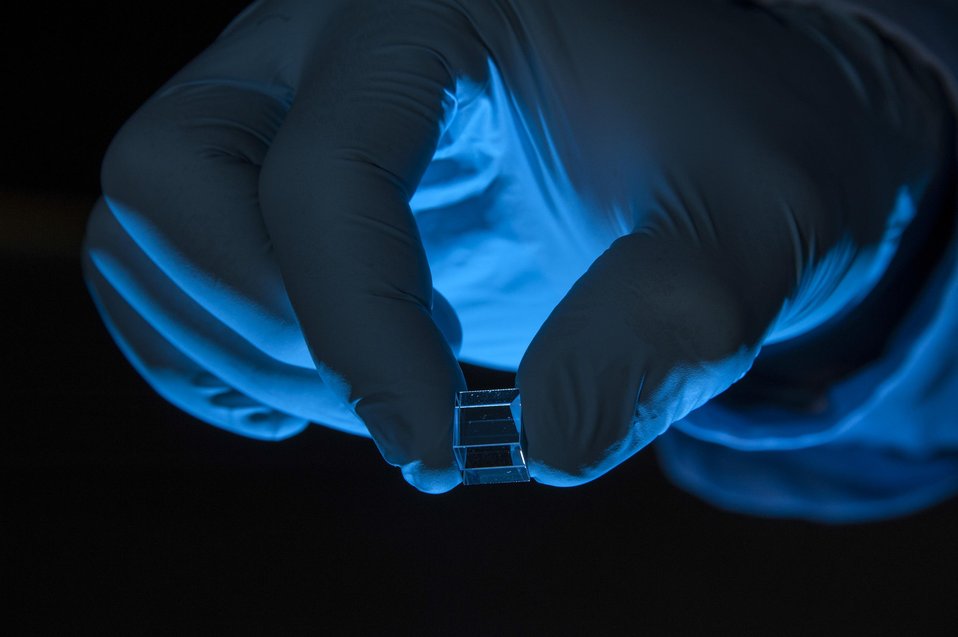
RESEARCHERS AT THE SAVANNAH RIVER NATIONAL LABORATORY ARE DEVELOPING PHOTONIC CRYSTALS FOR ENHANCED RADIATION DETECTORS.

This innovative process uses nano-porous anodized aluminum oxide masks to pattern the surfaces of bismuth gemanate scintillator crystals. It aims to increase detector sensitivity by enhancing light extraction from the scintillating surfaces.